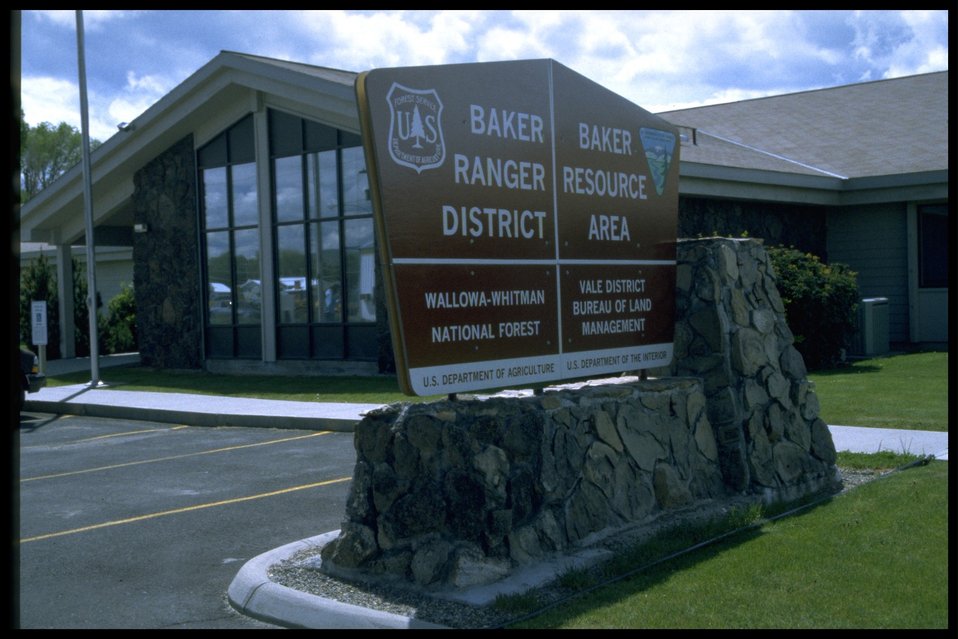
BLM Baker Resource Area Sign.